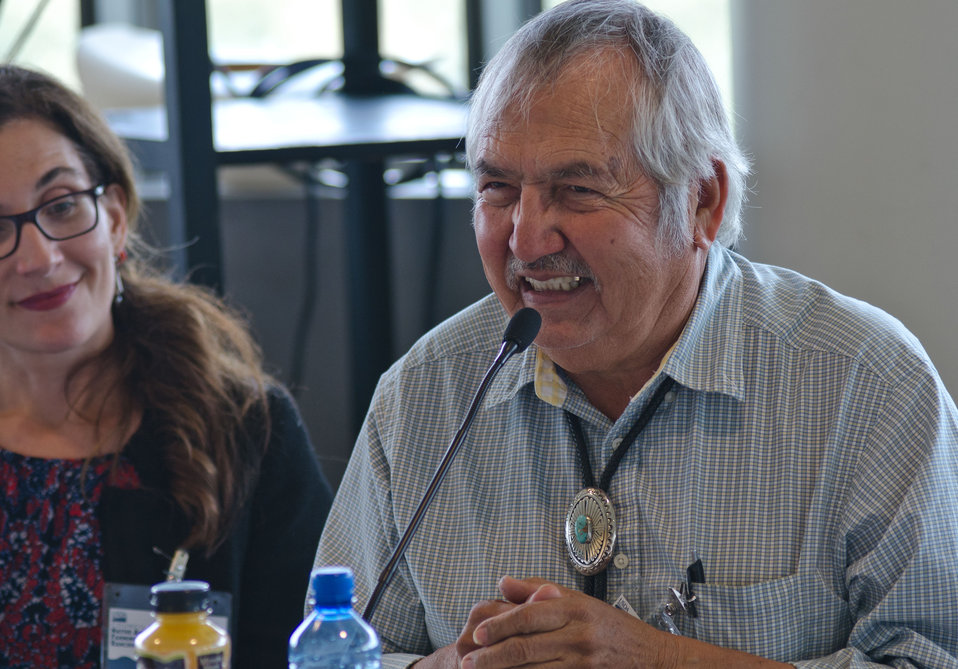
Navaho Nation Rancher from Shiprock, NM., Gilbert Harrison, speaks at the first business meeting of the U.S. Department of Agriculture’s (USDA) Council for Native American Farming and Ranching (CNAFR) held at the National Museum of the American Indian in Washington, D.C. on Tuesday, Aug. 14, 2012. CNAFR was created to advise the Secretary on ways to eliminate barriers to participation for Native American Farmers and Ranchers in USDA programs. The Council was established as part of the Keepseagle settlement, and is conducted under the oversight of USDA's Office of Tribal Relations under the Office of the Secretary of Agriculture.